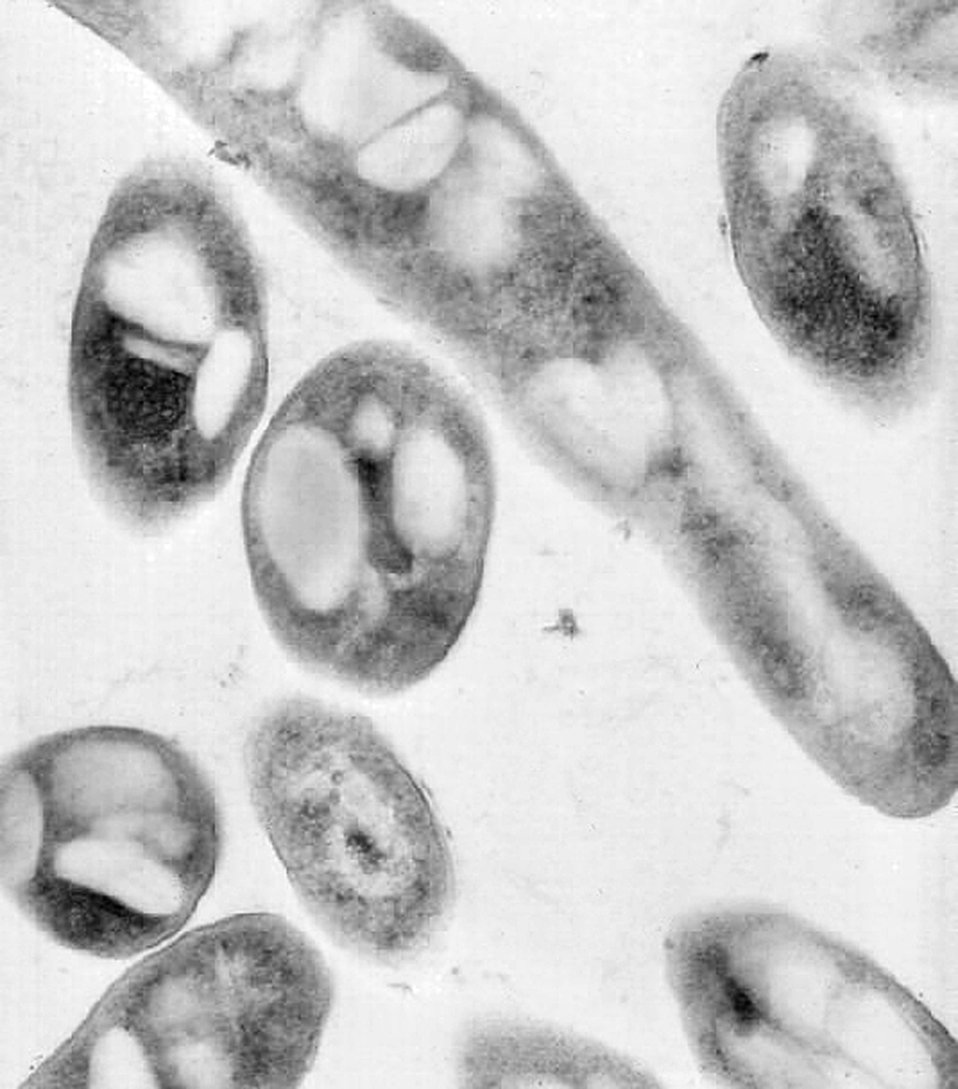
Transmission electron micrograph of Bacillus anthracis.